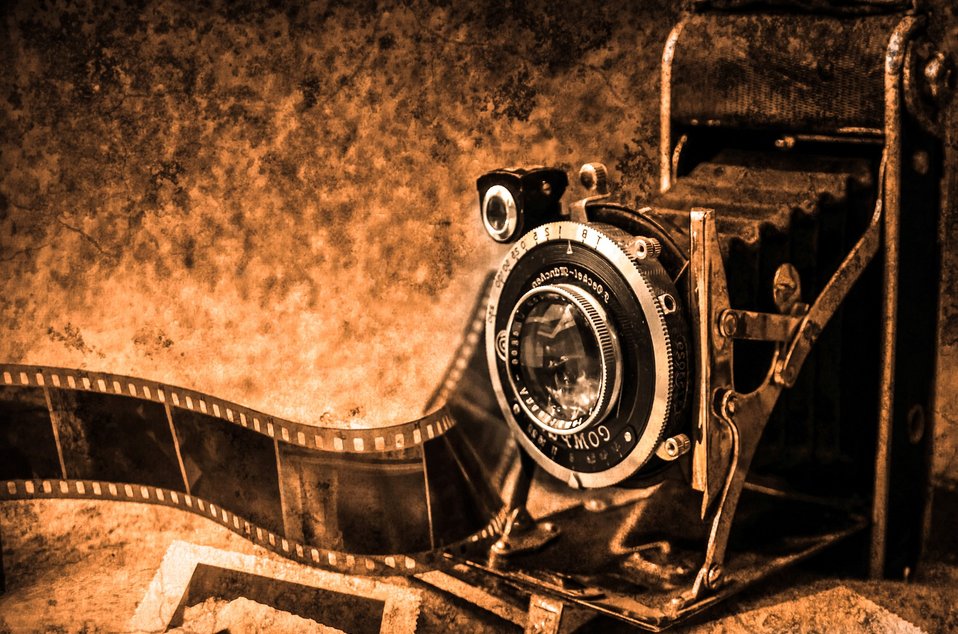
Old camera.